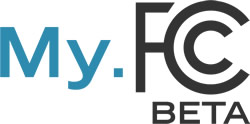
MyFCC

logo